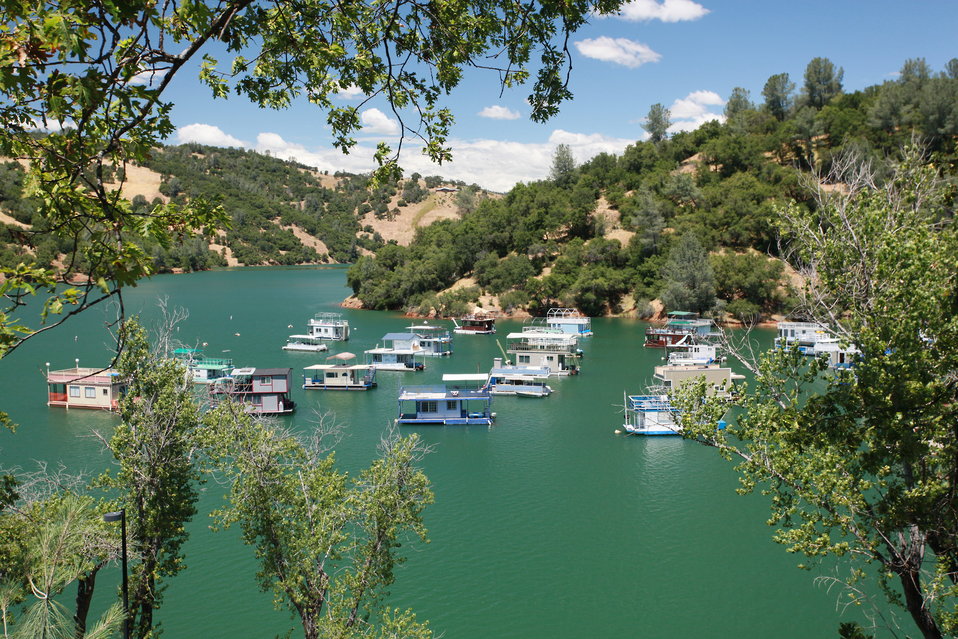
Englebright Lake

Boating, fishing and boat-in camping are some of the recreational opportunities at Englebright Lake near Marysville, Calif., shown on June 10, 2010. Formed by Englebright Dam the lake is 9 miles long with a surface area of 815 acres, an elevation of 527 feet and 24 miles of shoreline. Completed by the U.S. Army Corps of Engineers Sacramento District in 1941, the dam was authorized by Congress for the storage of hydraulic gold mining debris on the Yuba River. The concrete arch dam spans 1,142 feet across and is 260 feet high. The lake and dam are managed by the Sacramento District.